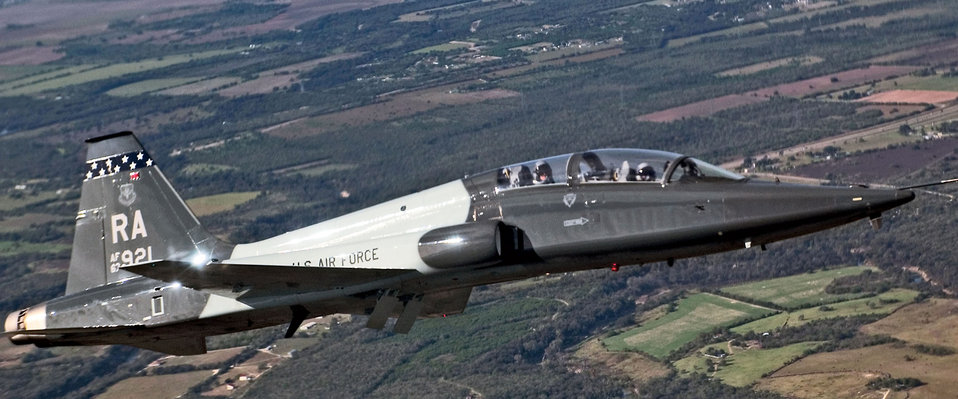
T-38 Talon

OVER LACKLAND AIR FORCE BASE, Texas -- A T-38 Talon participates in the 2004 Lackland Airfest.